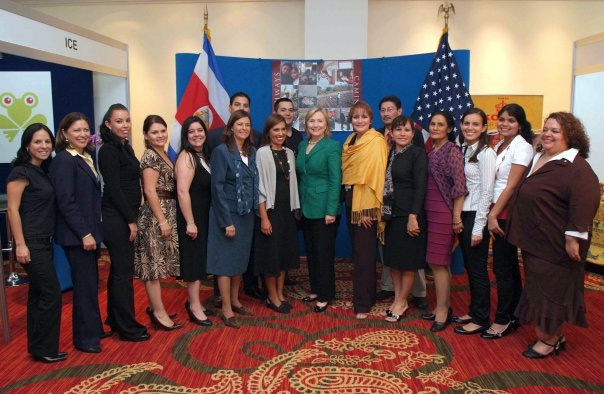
Secretary ClintSecretary Clinton With Women's Entrepreneurs Group

U.S. Secretary of State Hillary Rodham Clinton poses with Women Entrepreneurs at the Pathways to Prosperity Conference in San José, Costa Rica, March 4, 2010.